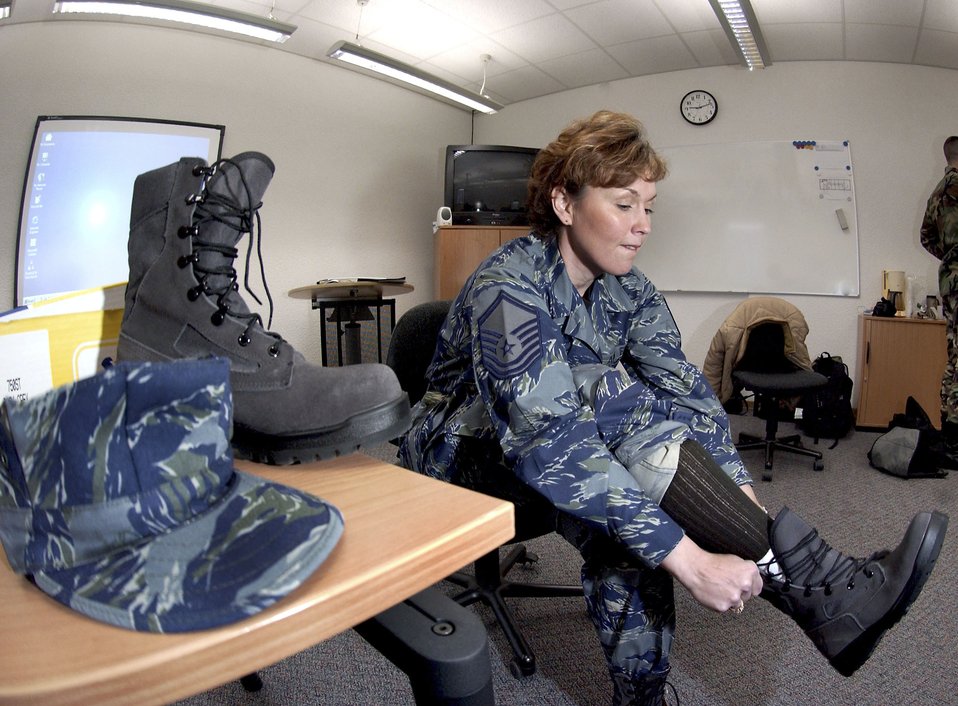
This is a test

RAMSTEIN AIR BASE, Germany -- Master Sgt. Dana Athnos tries on one of the gray no-polish boots being wear-tested here. Sergeant Athnos, who is assigned to the Air Force Uniform Board at the Pentagon, volunteered to assist with the Air Force Uniform Board's testing of a possible replacement for the current battle dress uniform. Testers are selected from airmen of all ranks and will provide board members with feedback.